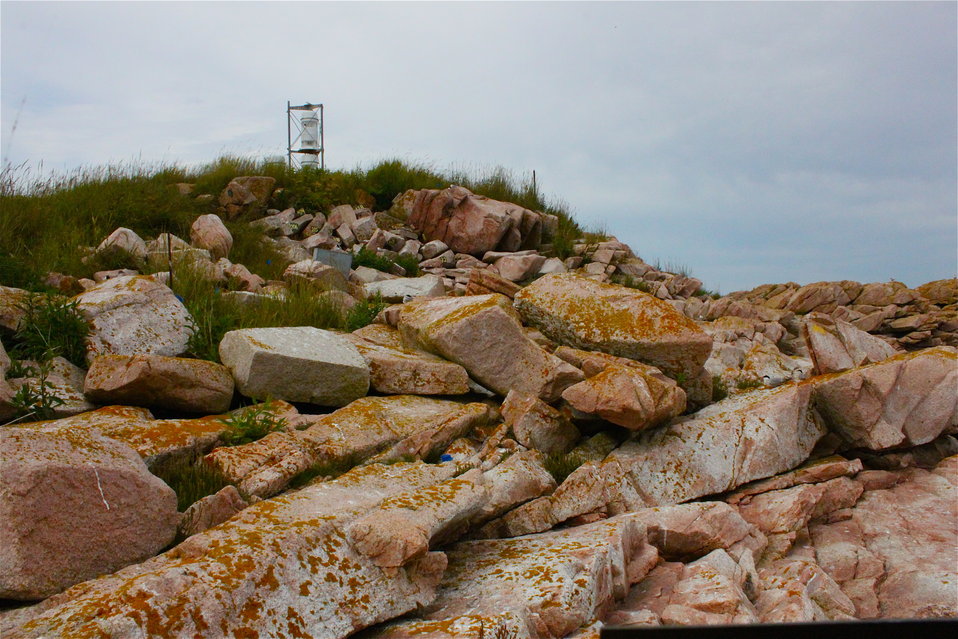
Numbered Puffin Buroughs and Flagged Tern Eggs